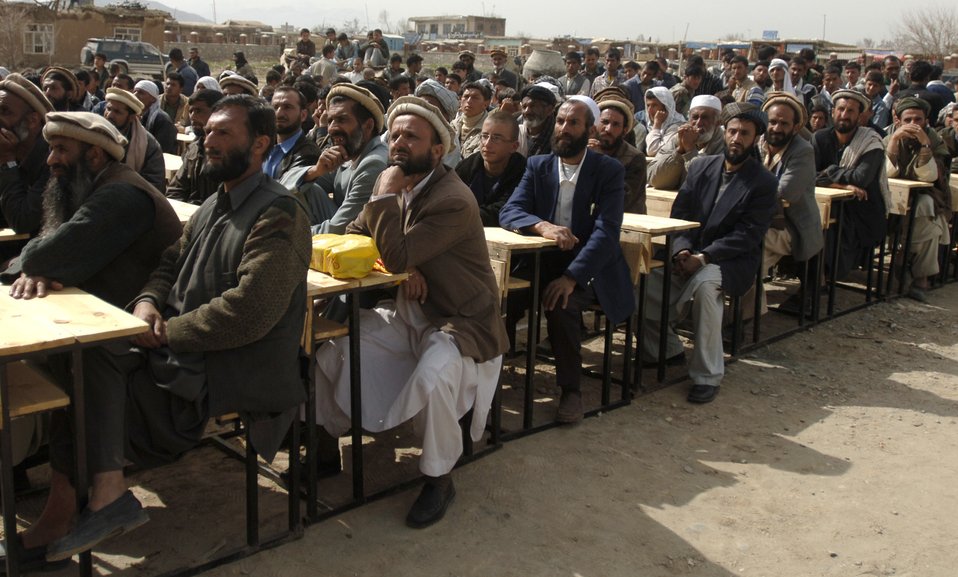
Bagram PRT rebuilds Afghanistan one school at a time

Hundreds of local Afghan men and women, along with Bagram Provincial Reconstruction Team members, attend a ceremony celebrating the Afghan New Year and the first day of school at the Mahmud Raqi High School in Deh Baba Ali, Afghanistan, March 26. Bagram PRT Team members aided in building the high school and donated approximately 3,000 pine and fruit trees along with several bundles of school supplies.